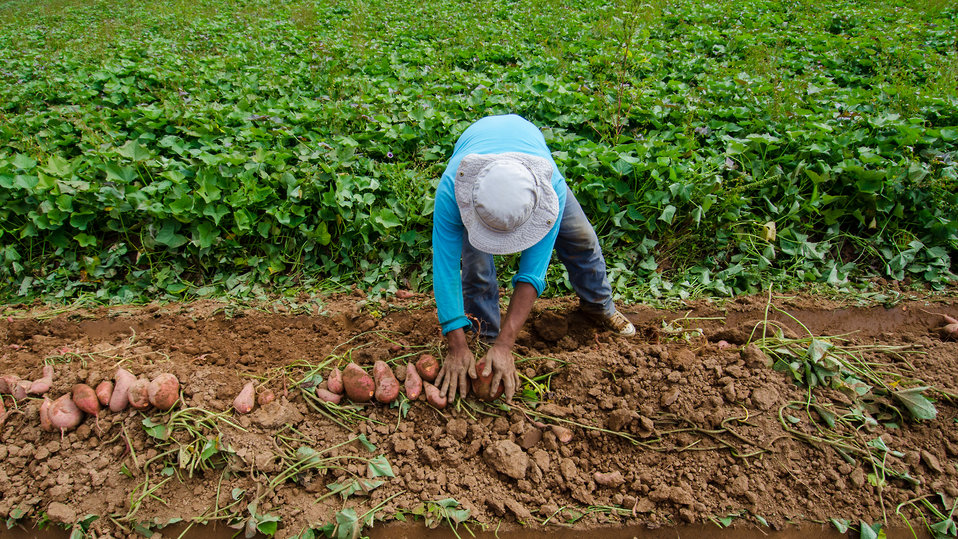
Harvested hand picked large sweet potatoes, at Kirby Farms in Mechanicsville, VA on Friday, Sept. 20, 2013. 200 acres of the farm are devoted to eggplant, spinach, beets, tomato, jalapeno peppers, melons and a variety of greens. Soybeans and small grain are grown on the remaining 300 acres. Using rotational crop practices allows Kirby Farms to double and triple crop yields. Wholesalers, who buy from this farm, sell the produce to major supermarkets in the Mid-Atlantic region, from North Carolina to Maryland. Restaurants in the local area prepare and serve the local bought produce to patrons in the Richmond, VA metropolitan area.